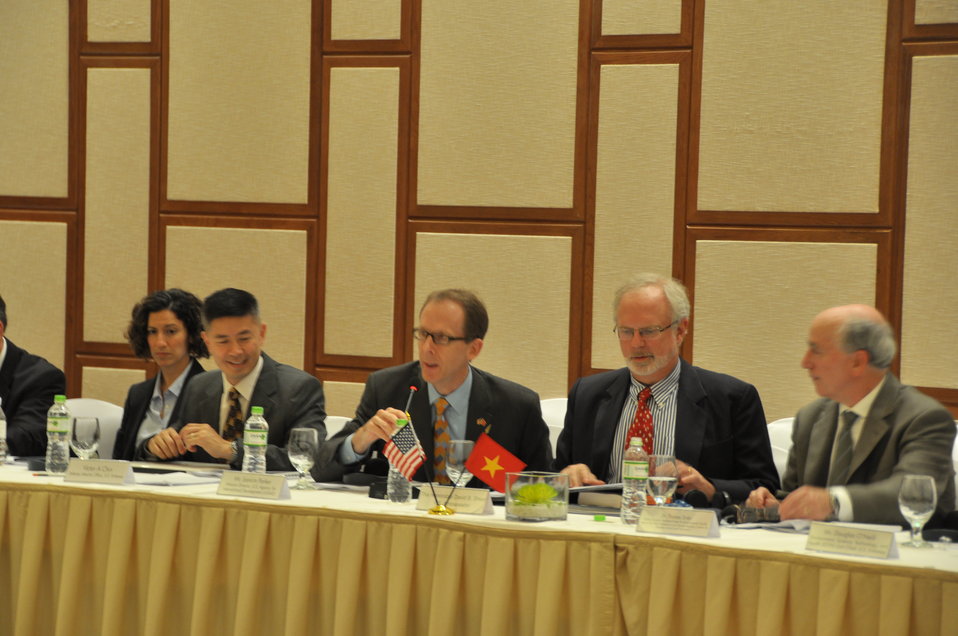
U.S. Ambassador (right) and USAID Mission Director (middle)

Danang, December 4, 2013.